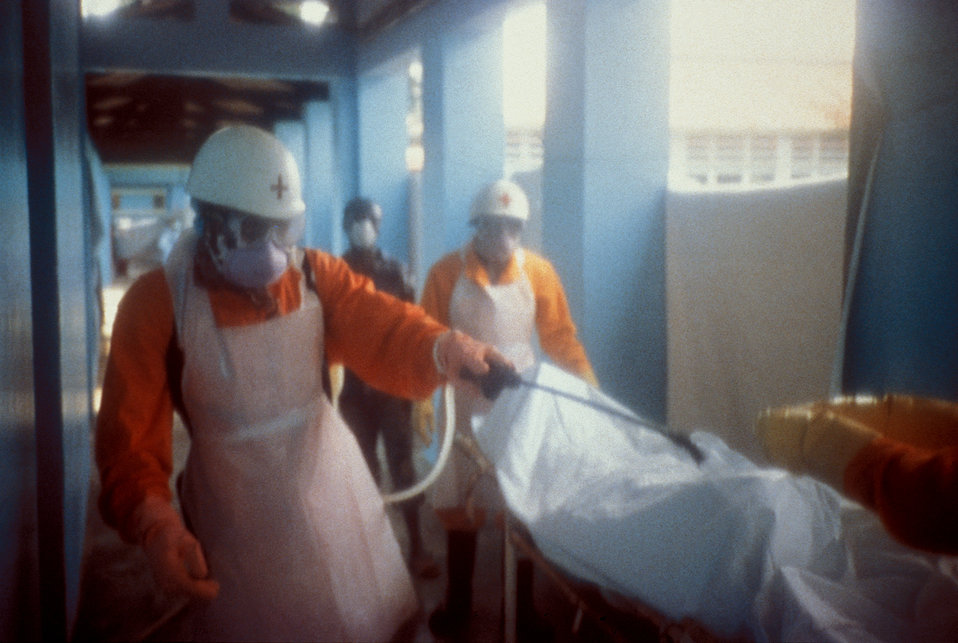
This local Red Cross team is disinfecting a body bag of an Ebola patient in Kikwit, Democratic Republic of the Congo, 1995.